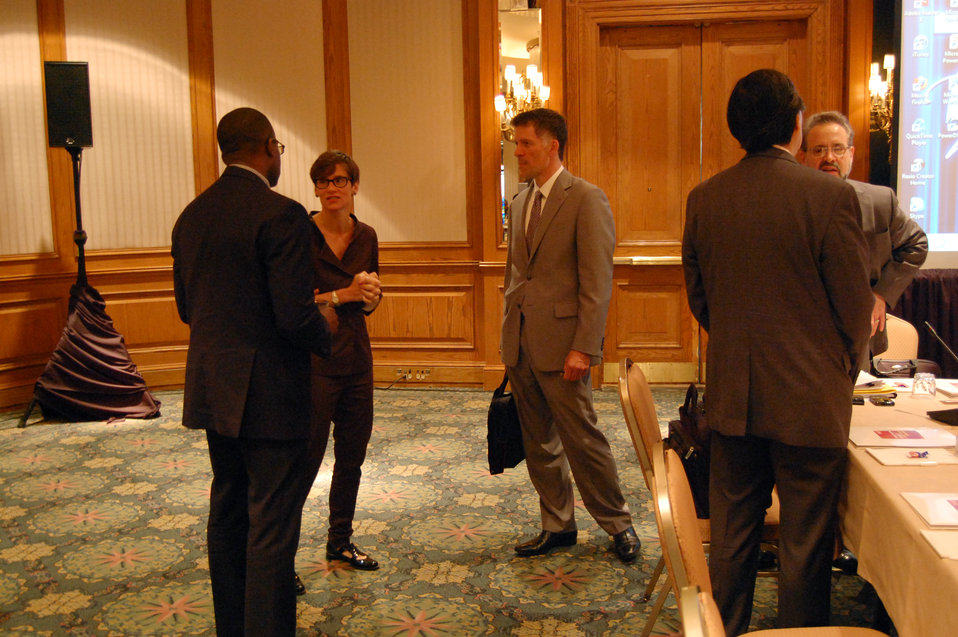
PACHA conf018